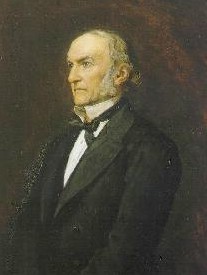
Acgladstone2